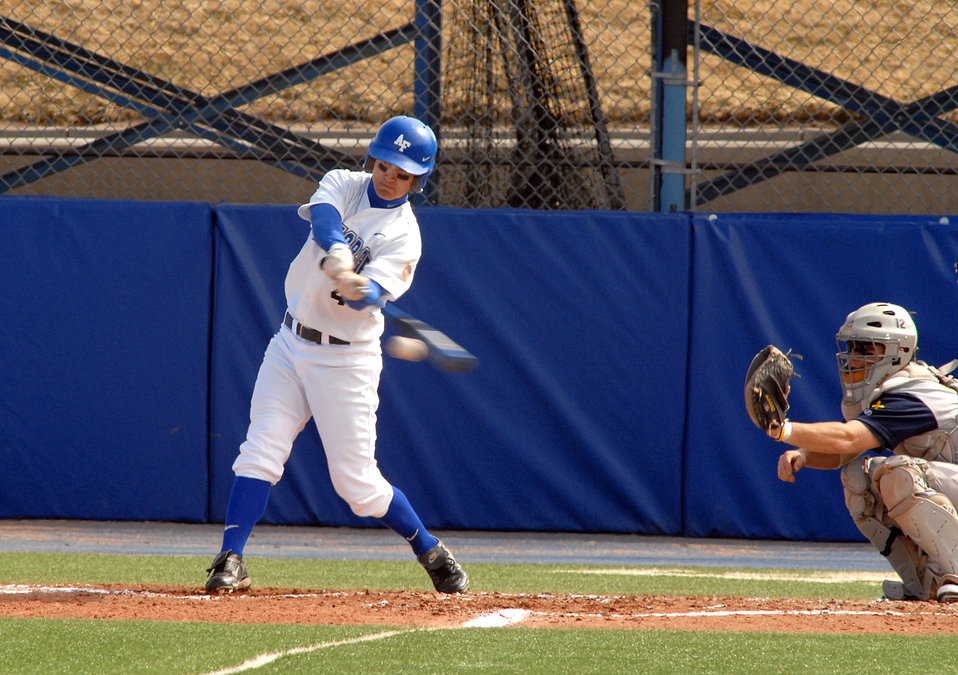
Air Force Rallies To 10th Inning Win Over Colorado Christian

Senior center fielder Jake Allen connects on a pitch as the Falcons rallied to a 10th inning 9-8 win against Colorado Christian in non conference baseball action at the Academy's Falcon Field. Air Force tallied 12 hits and did not commit an error in the field on the day. The Falcons improve to 11-19 on the season.